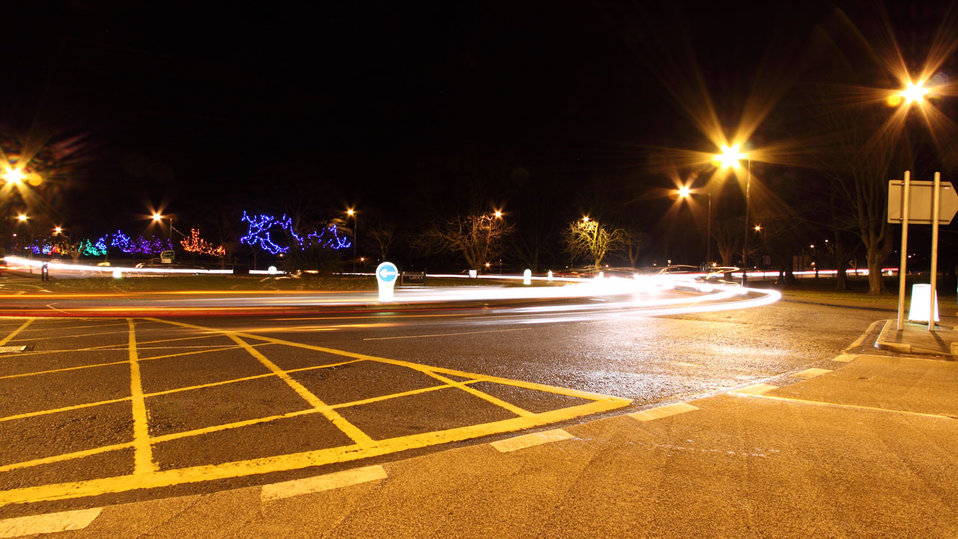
Night traffic

Roundabout at night.